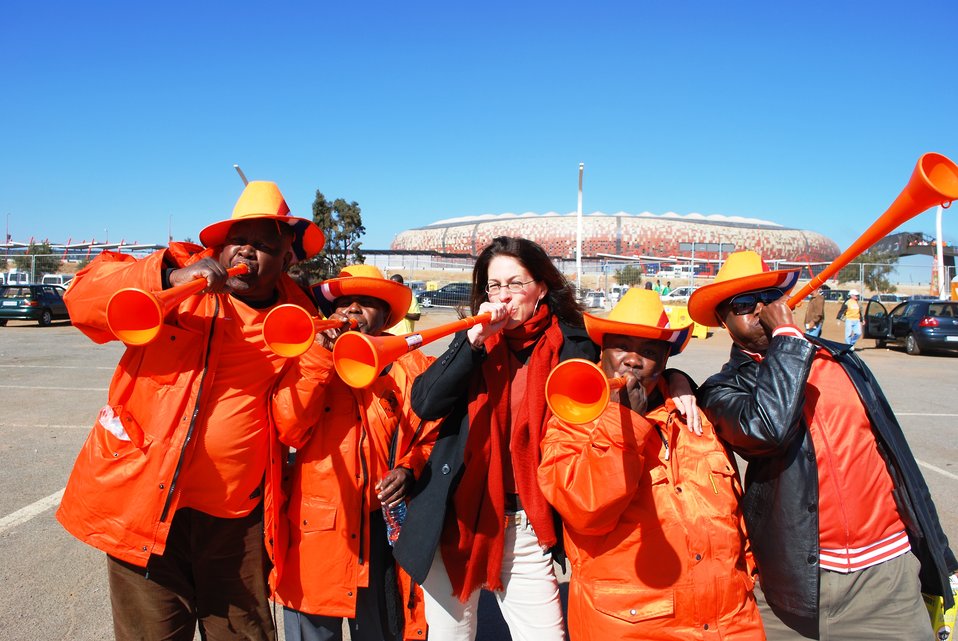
Dutch fans play their vuvuzelas before the Netherlands vs. Denmark World Cup soccer match at Soccer City Stadium in Johannesburg, South Africa, on June 14, 2010.